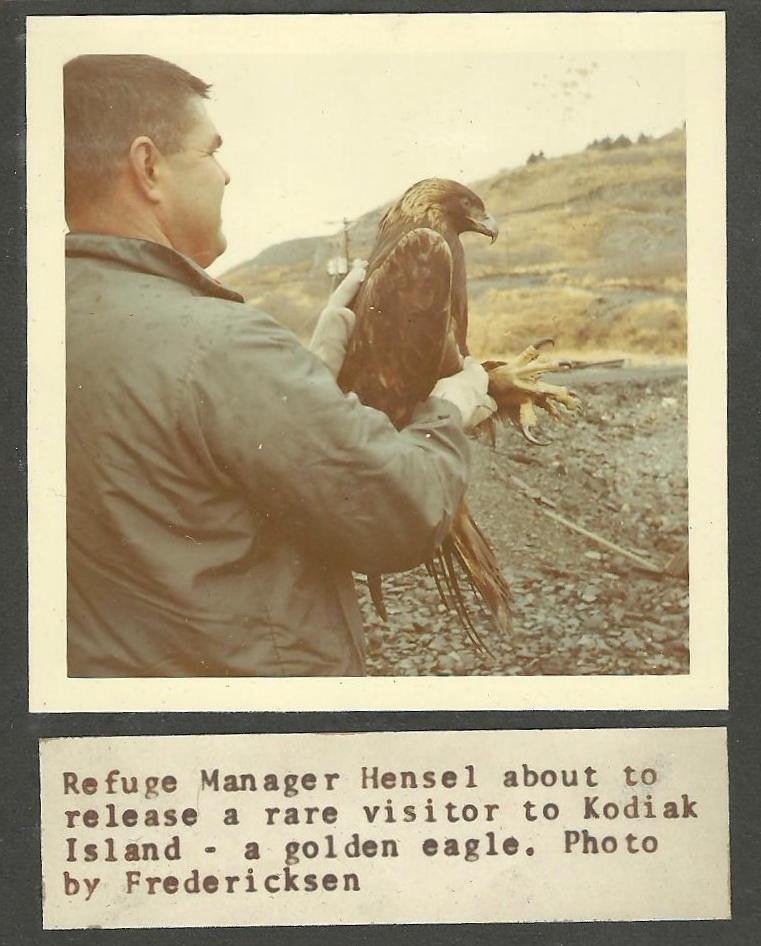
(1968) Out of the Office, Into the Field

Credit: USFWS

Source and Contact: Kodiak National Wildlife Refuge